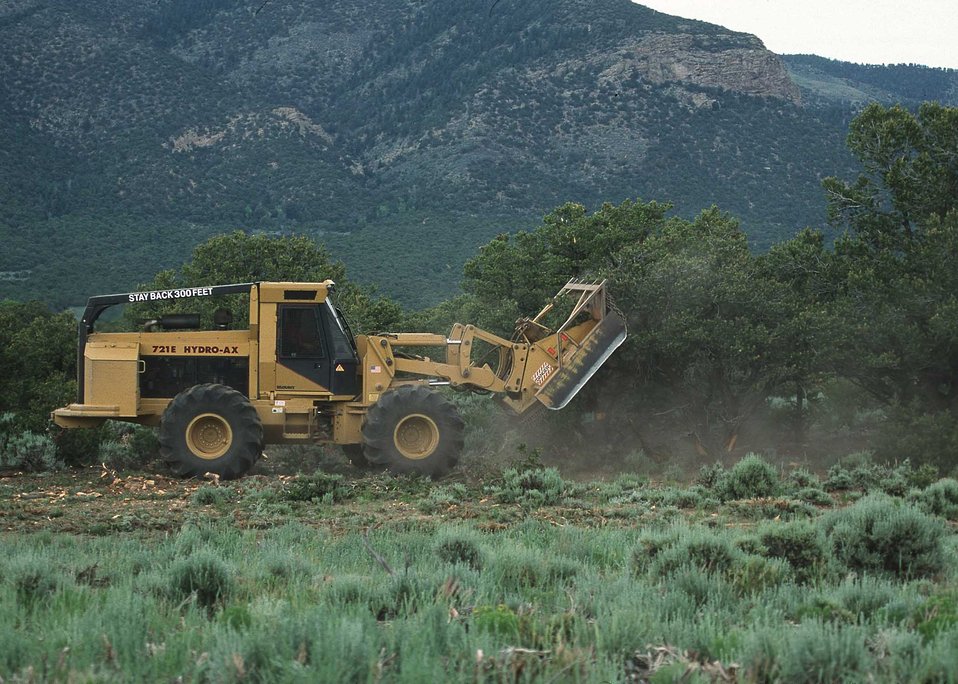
Hydroax at FT Ranch.